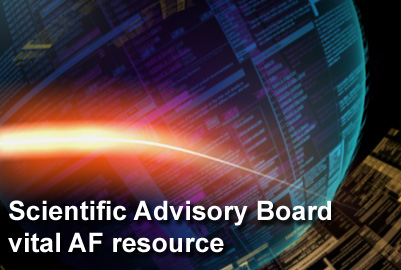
Scientific Advisory Board

The Air Force Scientific Advisory Board brings together scientists and engineers representing the widest possible scientific and technical expertise to continue the tradition of leading the way in technological innovation.